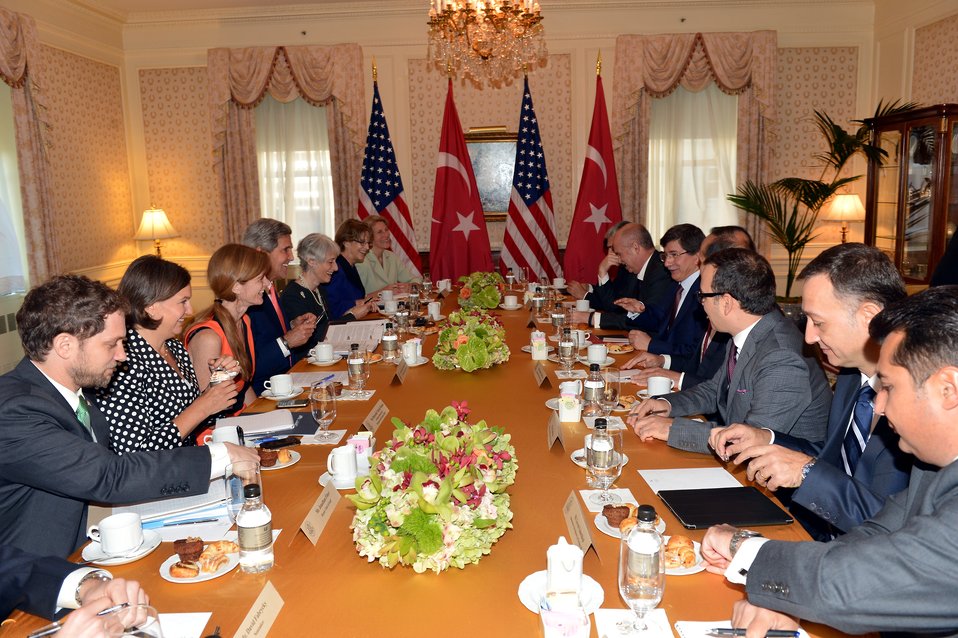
Secretary Kerry Meets With Turkish Foreign Minister Davutoglu

U.S. Secretary of State John Kerry holds a bilateral meeting with Turkish Foreign Minister Ahmet Davutoglu in New York City on September 23, 2013.